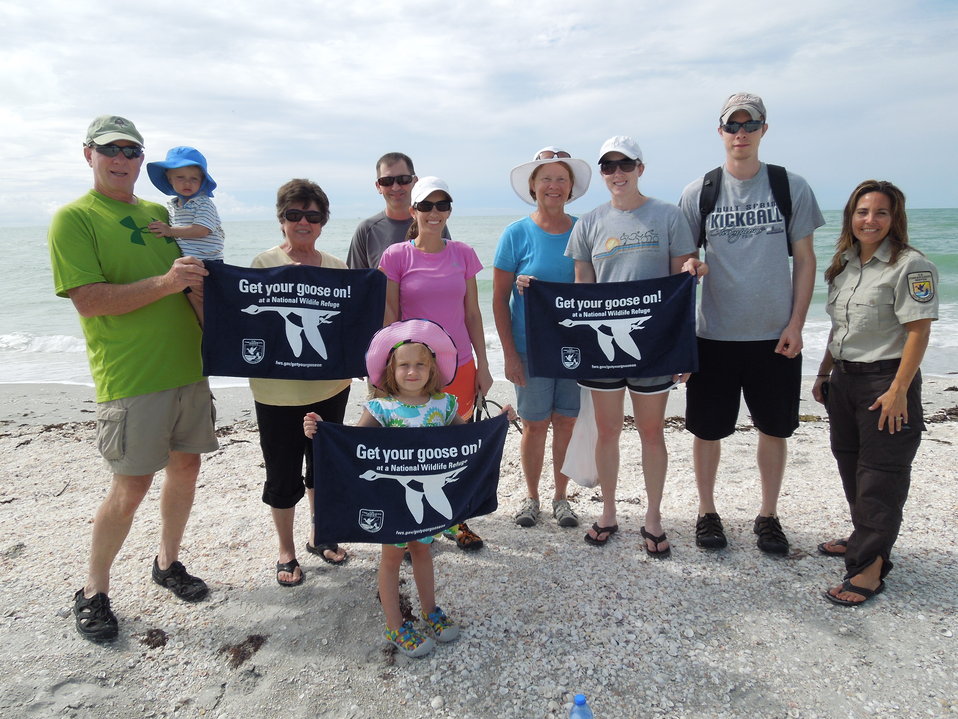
GYGO! at J.N. 'Ding' Darling National Wildlife Refuge

This family travelled all the way from Missouri to the subtropical barrier island of Sanibel in the Gulf of Mexico to Get Their Goose On!